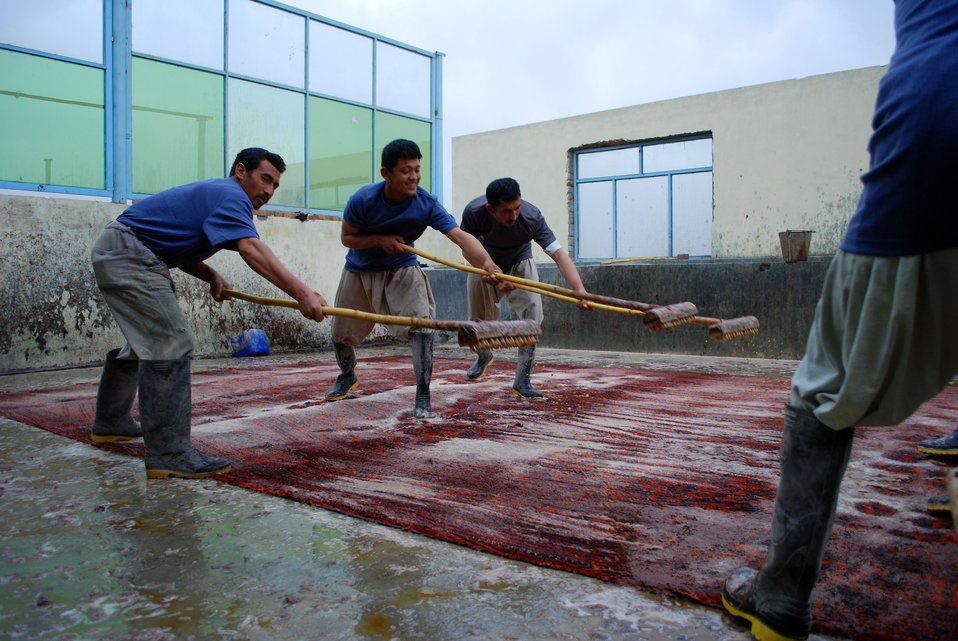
'On the Road' in Nangarhar Province